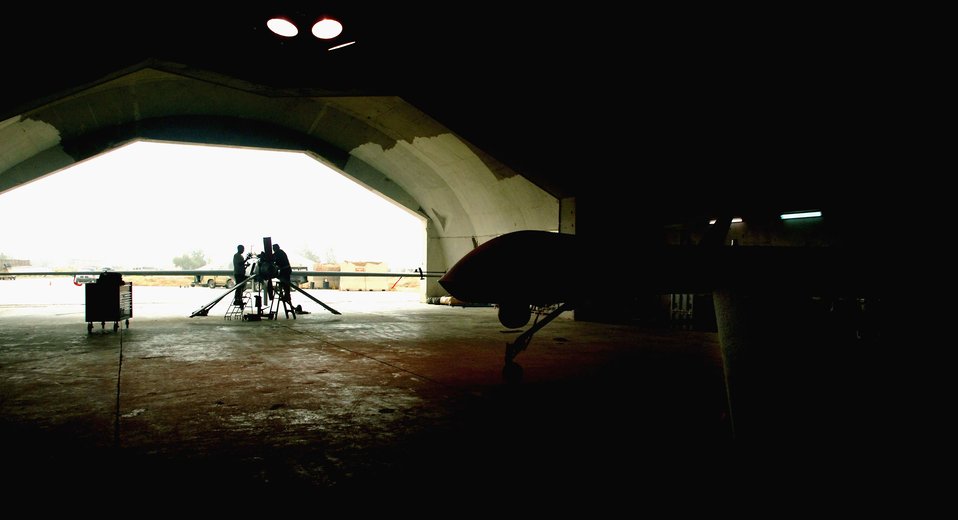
Predators wait to soar into Iraqi sky

Jonathan Hagy and Russell Gordy work on an MQ-1 Predator unmanned aerial vehicle May 17at Balad Air Base, Iraq. The Predator provides armed reconnaissance, airborne surveillance and target acquisition for coalition forces. Mr. Hagy and Mr. Gordy are avionics mechanics. The Predator carries the Multispectral Targeting System with AGM-114 Hellfire missile targeting capability and integrates electro-optical, infrared, laser designator and laser illuminator into a single sensor package. The aircraft can employ two laser-guided Hellfire anti-tank missiles with the MTS ball.